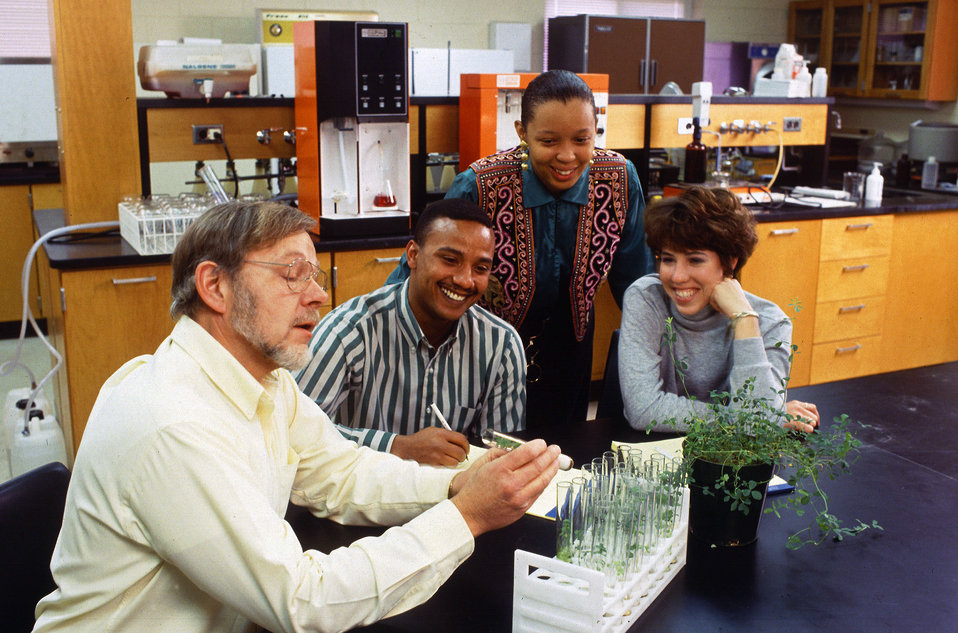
Professor Edward Jones discusses an alfalfa nutrition experiment with Delaware State University students (left to right) Tony Carney, Latisha Corey, and Karen Meyer.